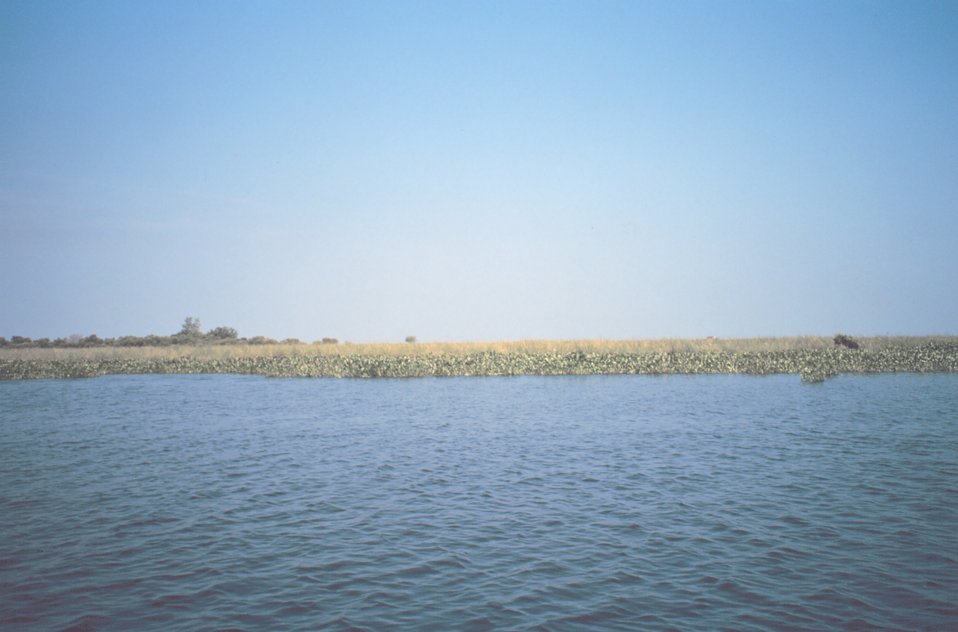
Marshland